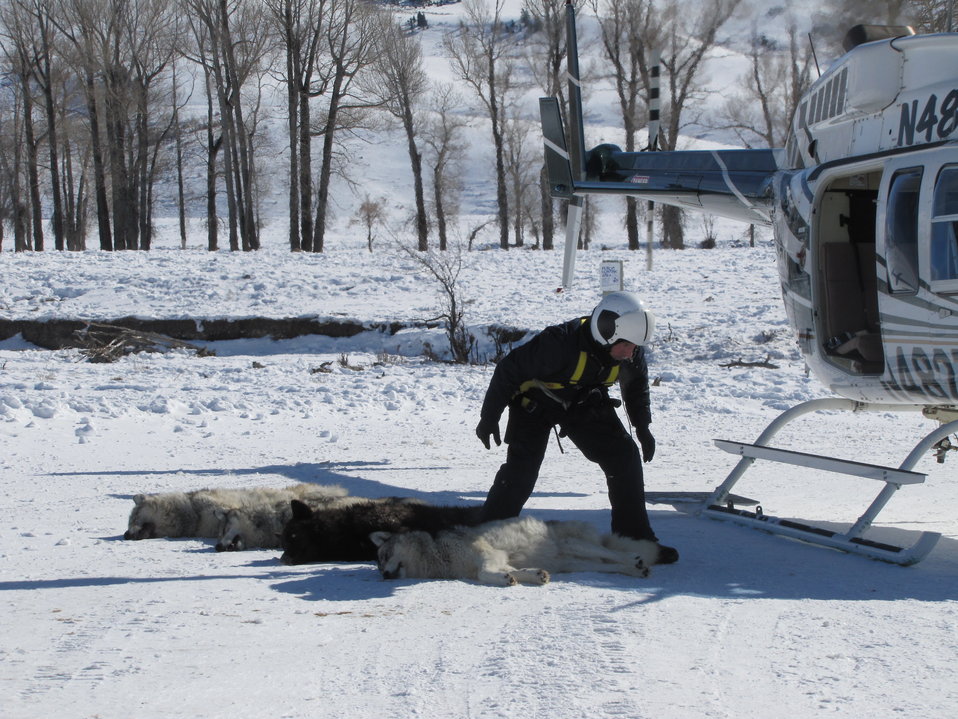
Unloading Passengers

Northern Rockies Wolf Coordinator Mike Jimenez unloads four wolves from a helicopter. The wolves were loaded into the aircraft and flown a short distance to a location where a refuge field crew stood by with the collars and sampling equipment.